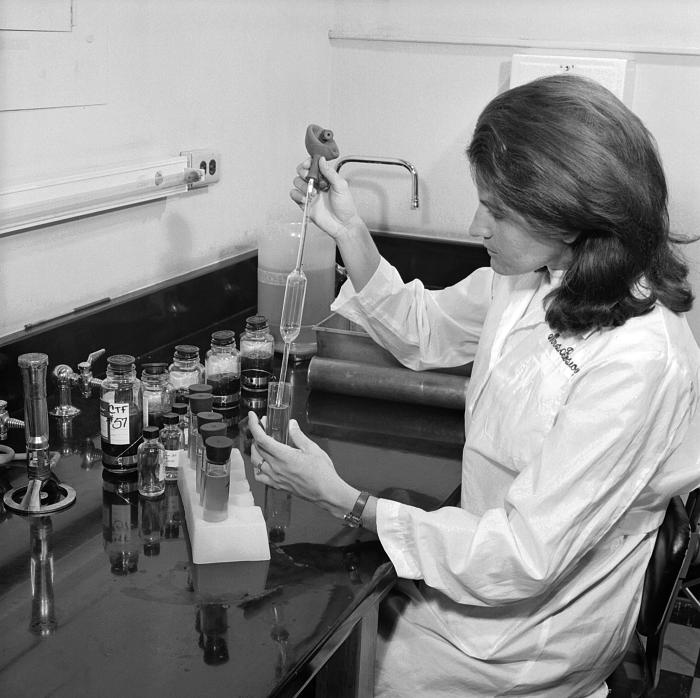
This historic 1967 photograph depicted a laboratory technician as she was processing a batch of immune sera, otherwise known as antiserum.